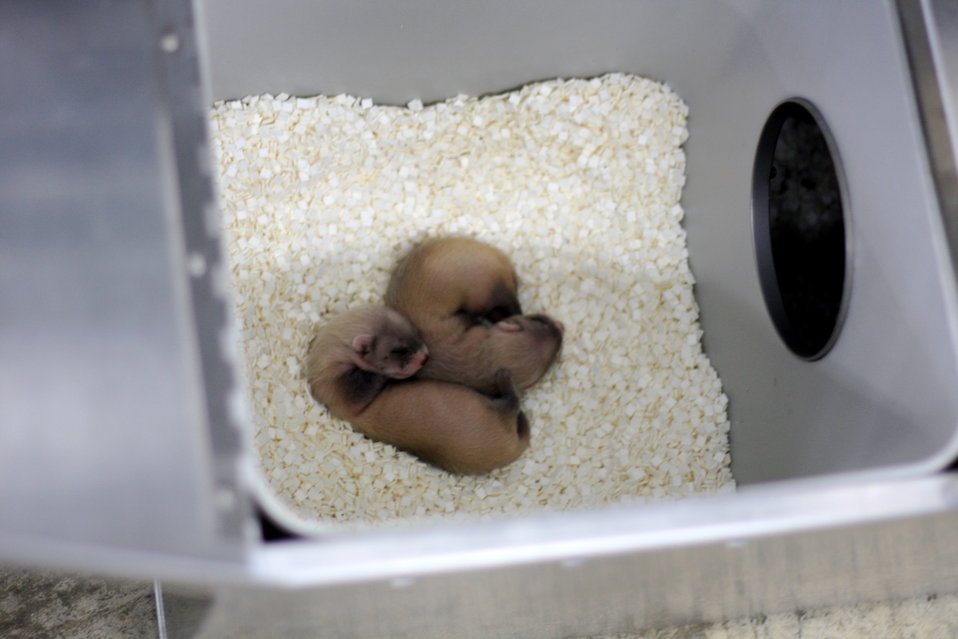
Interns visit the NBFFCC

In the summer of 2012, USFWS Region 6 interns visited the National Black-footed Ferret Conservation Center (NBFFCC) in Colorado to learn how the program reintroduces the endangered Black-footed ferret back into its native habitat.